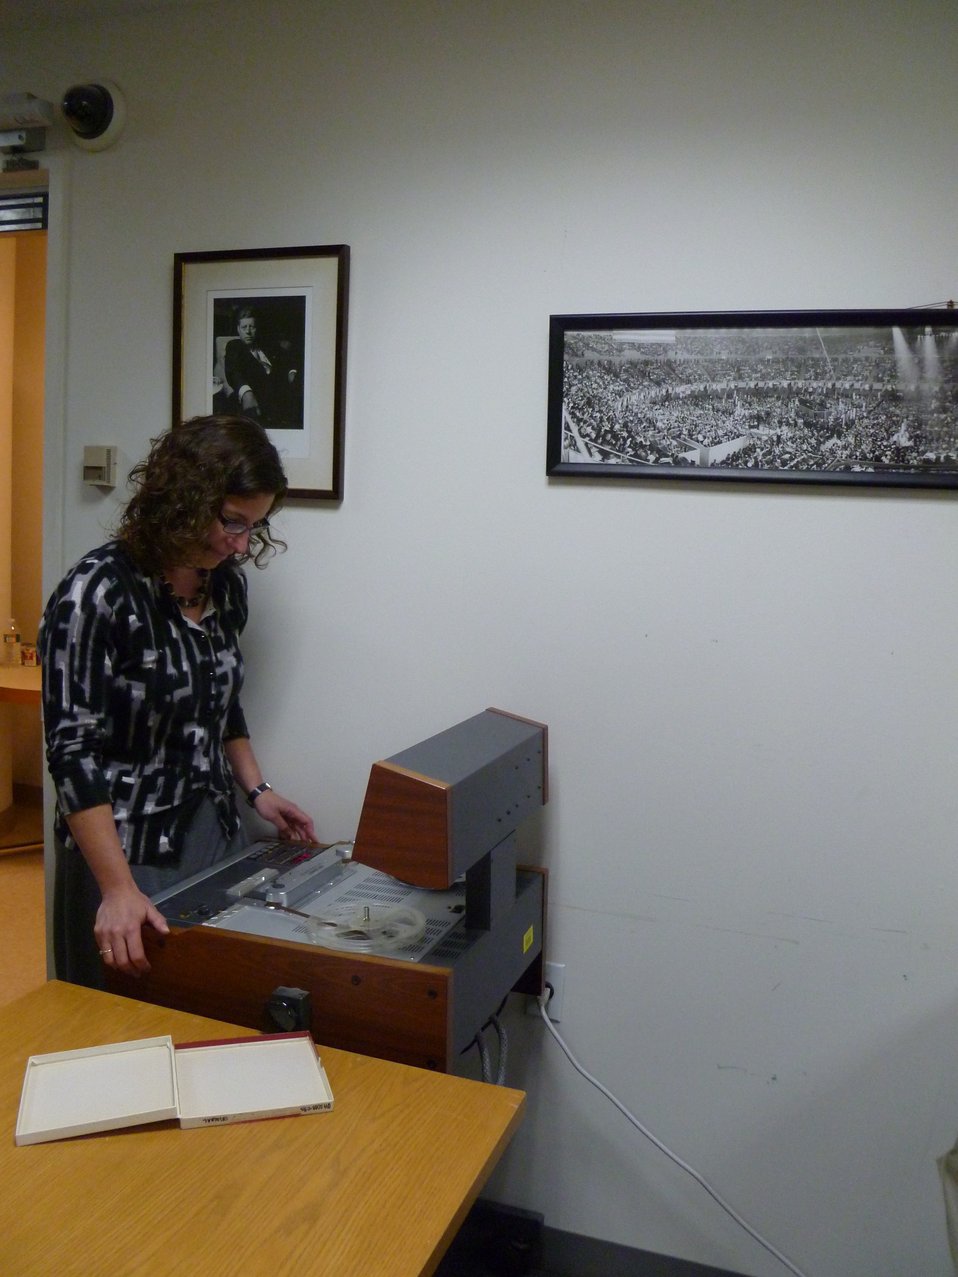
Audiovisual Archivist Laurie Austin listens to an interview from the JFK Library's oral history interview collection; Location: John F. Kennedy Presidential Library, Boston, MA